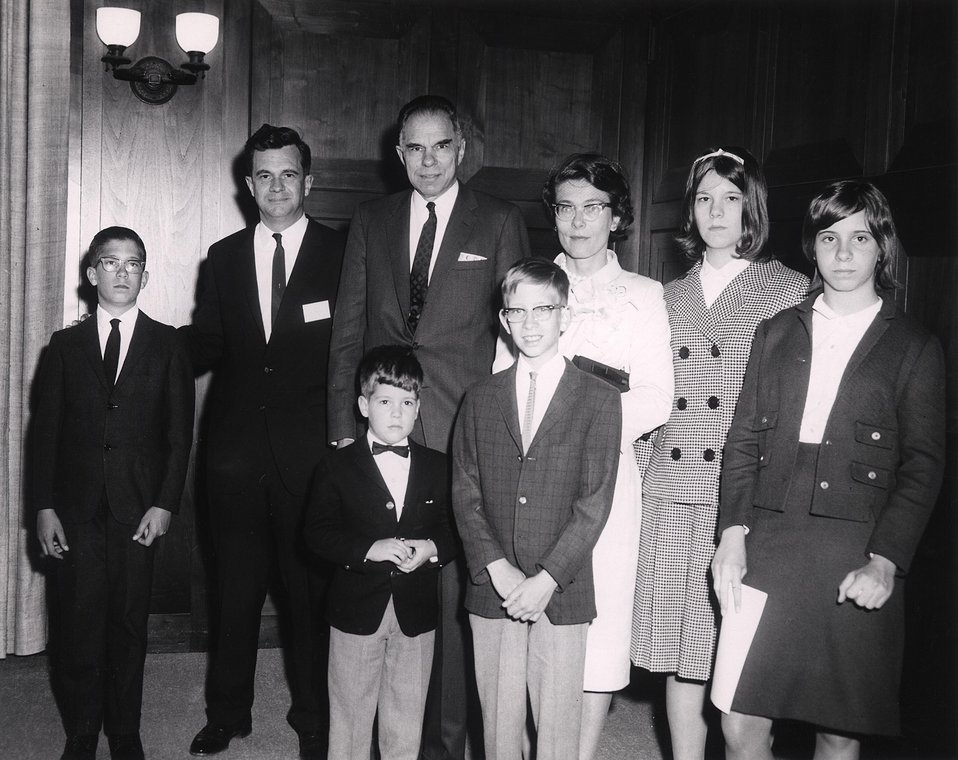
E. O . Lawrence Award Ceremony. National Academy of Sciences. April 29, 1965. Dr.Seaborg, Dr. Taylor and Family.